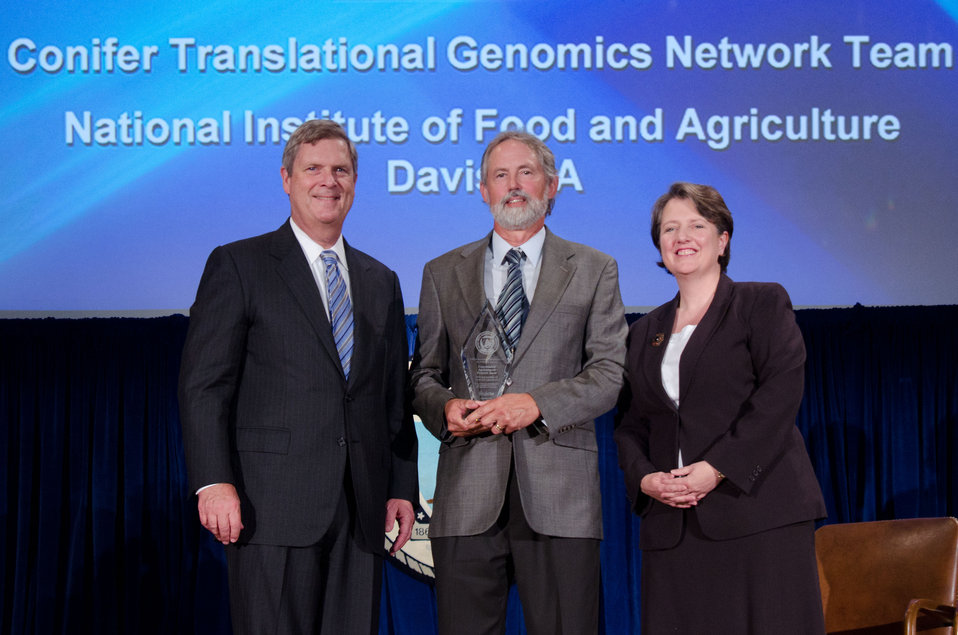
Agriculture Secretary Tom Vilsack (l) and Deputy Secretary Kathleen Merrigan (r), presents the Ensuring Our National Forests and Private Working Lands Are Conserved, Restored, and Made More Resilient To Climate Change, While Enhancing Our Water Resources Award to Conifer Translational Genomics Network Team, National Institute of Food and Agriculture, Davis, CA. David B. Neale, Group Leader. For a collaborative research and outreach approach to successful development and application of genomics-based tree breeding technology that will enhance US competitiveness in the production of forest products. On Wednesday, September 14, 2011 in the Jefferson Auditorium at the US Department of Agriculture in Washington, DC.